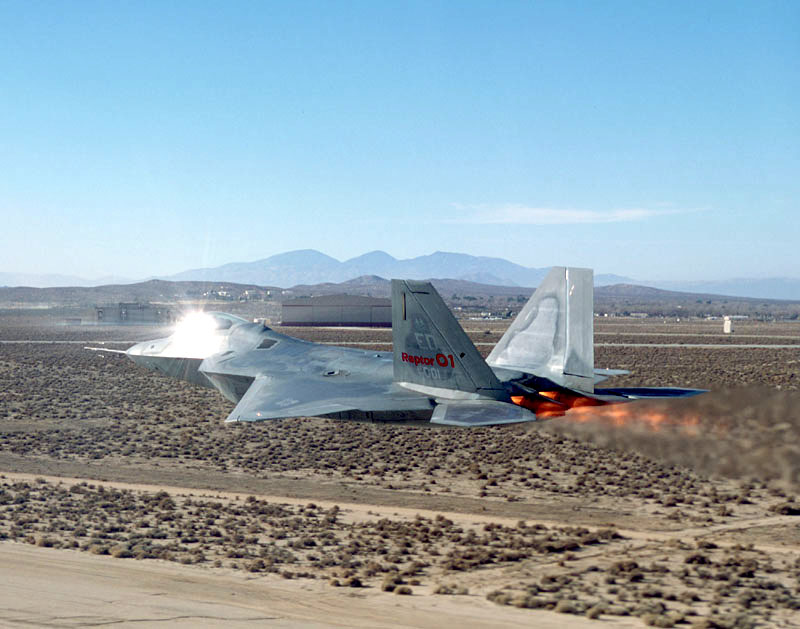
Engage afterburner

FILE PHOTO -- The F/A-22 is an air-superiority fighter with improved capability over current Air Force aircraft. From the inception of the battle, the F/A-22's primary objective will be to establish air superiority through the conduct of counter air operations. The F/A-22 also has an inherent air-to-surface capability. A combination of improved sensor capability, improved situational awareness, and improved weapons provides first-kill opportunity against the threat.